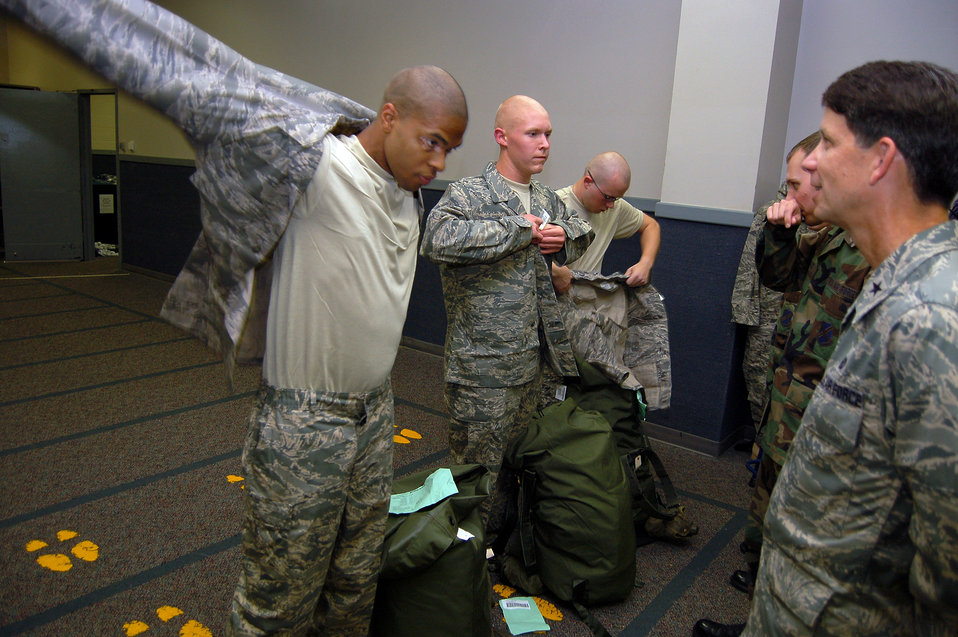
Basic trainees begin to receive ABUs

Basic trainee Kendell Pollock tries on a set of the Airman battle uniform while Brig. Gen. Darrell D. Jones watches to ensure the uniform is a good fit at the basic trainee equipment issue building Oct. 3 at Lackland Air Force Base,Texas. The new crop of recruits was the first wave of trainees to be issued ABUs. General Jones is the 37th Training Wing commander.